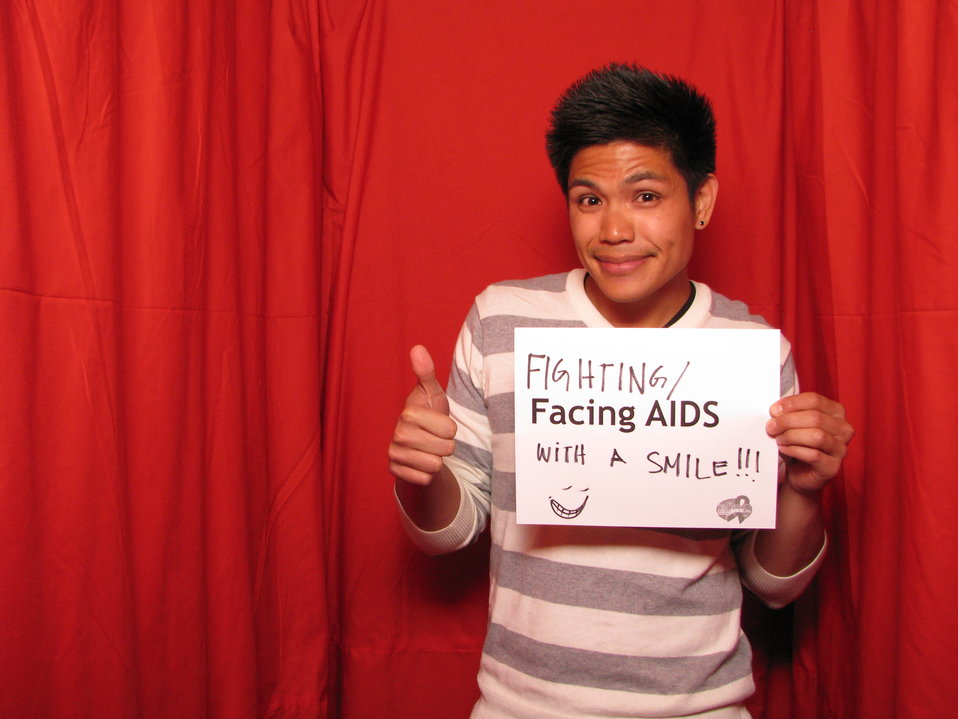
FIGHTING/ FACING AIDS WITH A SMILE!!!

From the AIDS.gov photo booth at the U.S. Conference on AIDS, September 2010 (Orlando, FL).